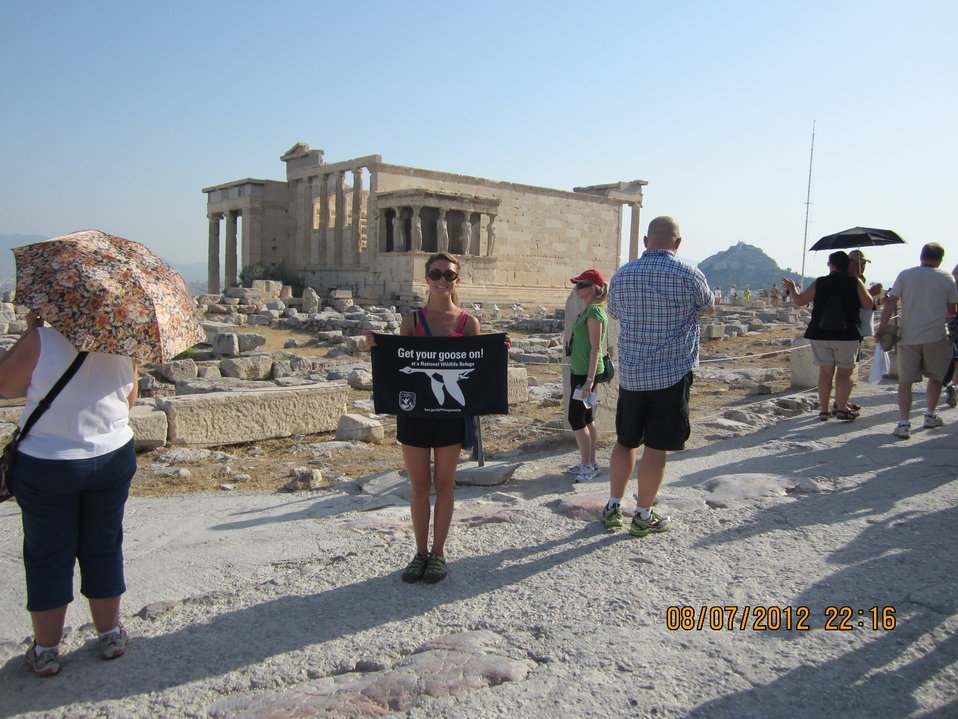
Get Your Goose On! - Parthenon Style!